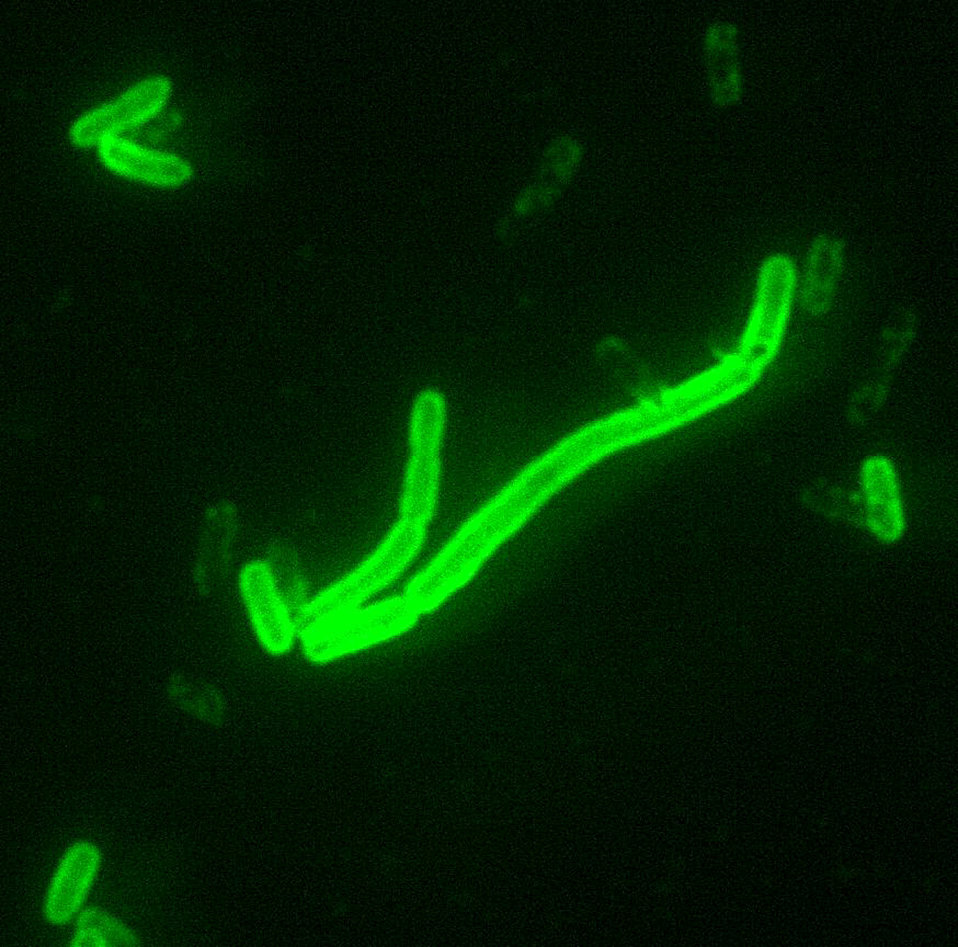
Yersinia pestis, Direct Fluorescent Antibody Stain (DFA), 200x Magnification.